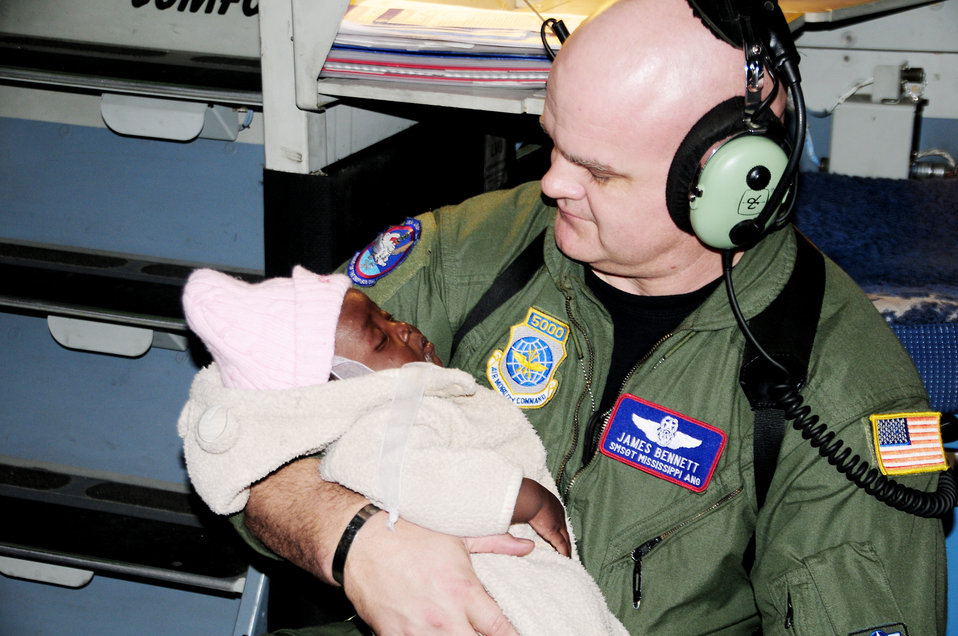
Operation Unified Response

Senior Master Sgt. James Bennett takes time out from his job to hold a Haitian baby for a mother who was asleep from exhaustion Jan. 21, 2010, at the Toussaint L?Ouverture International Airport in Port-au-Prince, Haiti. Sergeant Bennett is a C-17 Globemaster III loadmaster with the Air National Guard.